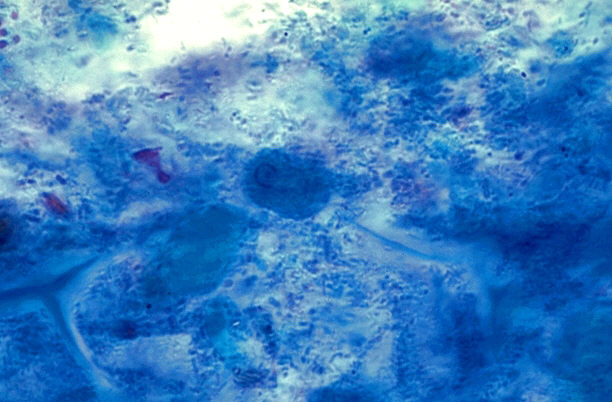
Entamoeba histolytica trophozoite. Wheatley's trichrome stain (blue filter).